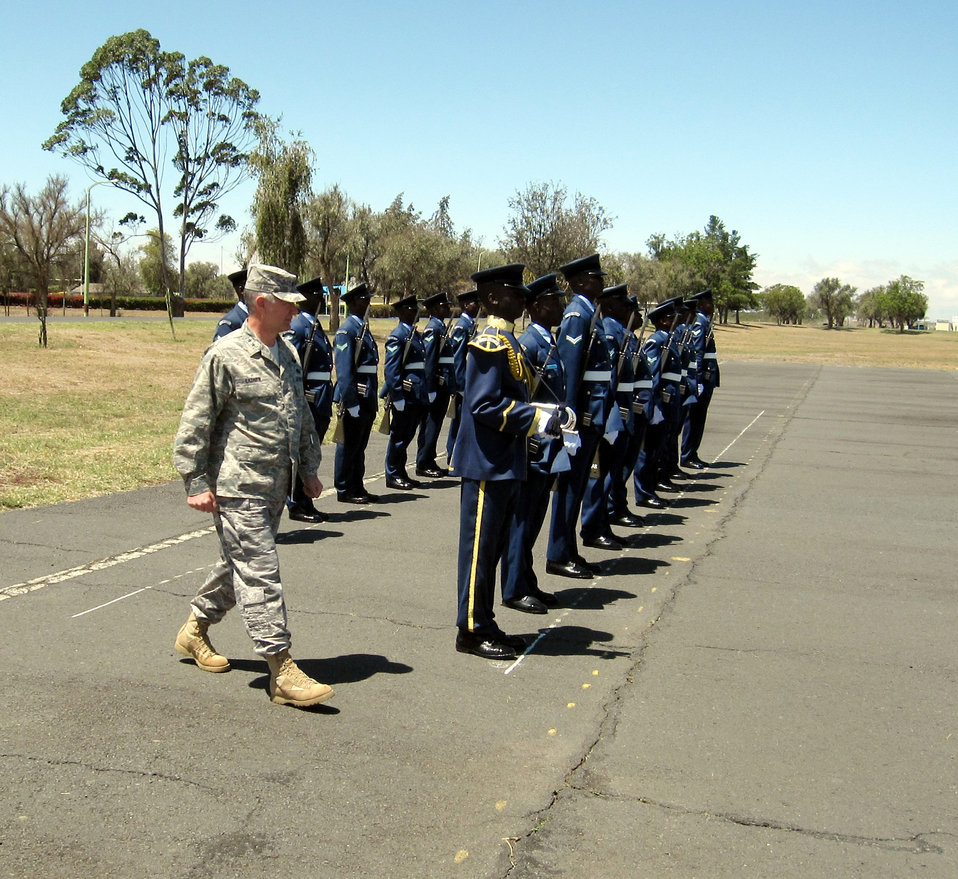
Air Forces Africa commander visits Kenyan air force

Maj. Gen. Ronald R. Ladnier conducts a ceremonial inspection of Kenyan air forces troops at Laikipia Air Base, Kenya, Aug. 25. The formation was offered as part of the General's welcome to the base during a senior leader engagement this week. General Ladnier met with senior Kenyan defense officials, including Kenyan air force leadership. The engagement included a discussion on how AFAFRICA, also known as 17th Air Force, can continue to assist Kenya in the evolution of its air force. General Ladnier is commander of Air Forces Africa.